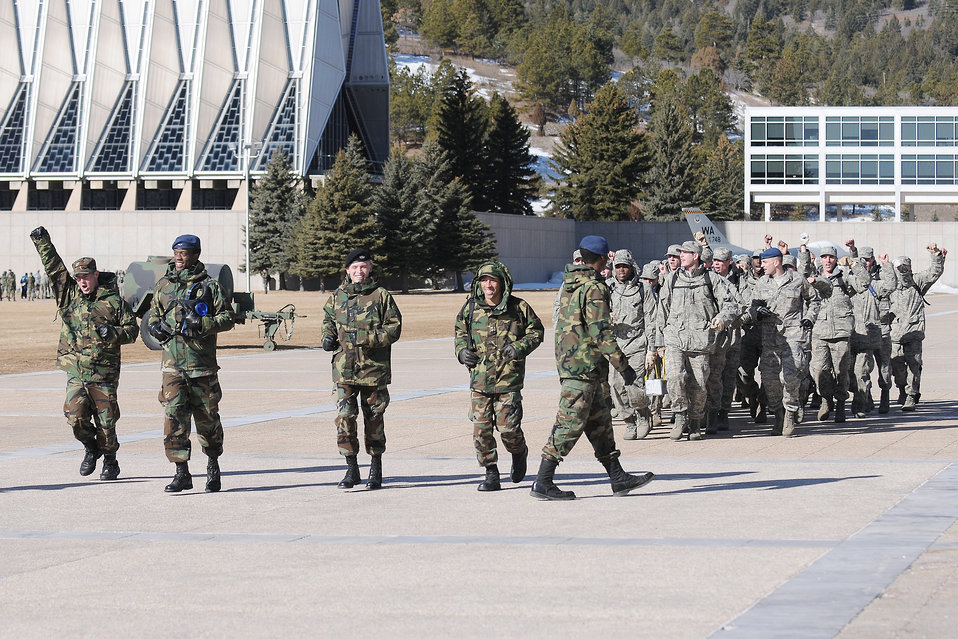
Recognition Days

Despite the rigors of Recognition events, members of Cadet Squadron 34 maintain high spirits and squadron pride at the U.S. Air Force Academy, Colo., March 12, 2010. Recognition will end with the freshmen being presented the Props and Wings insignia, signifying their transition into upper class cadets.